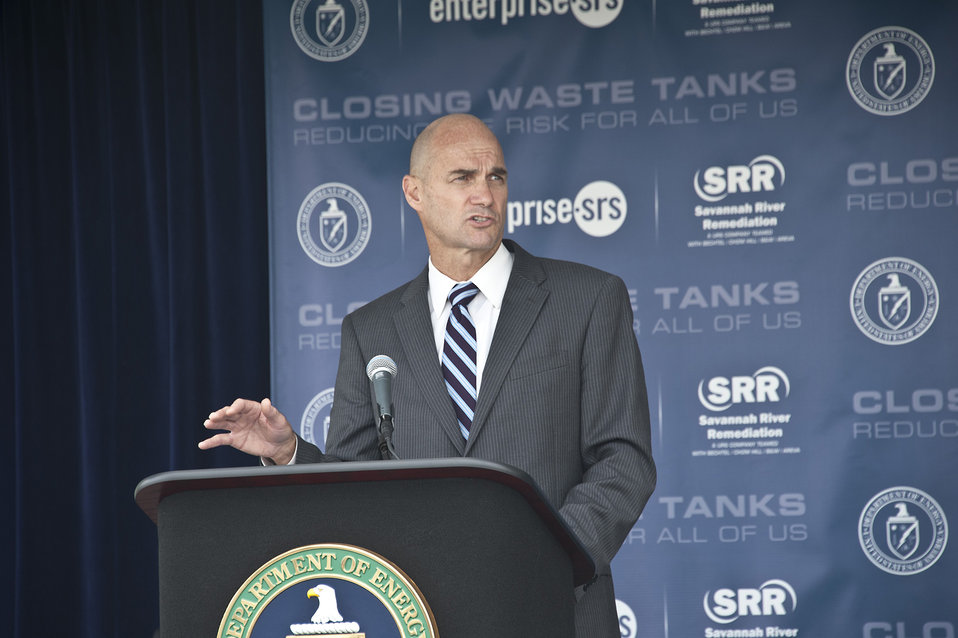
Thomas P. D’Agostino, Undersecretary for Nuclear Security and Administrator, NNSA speaking at the formal tank closure celebration in H Area